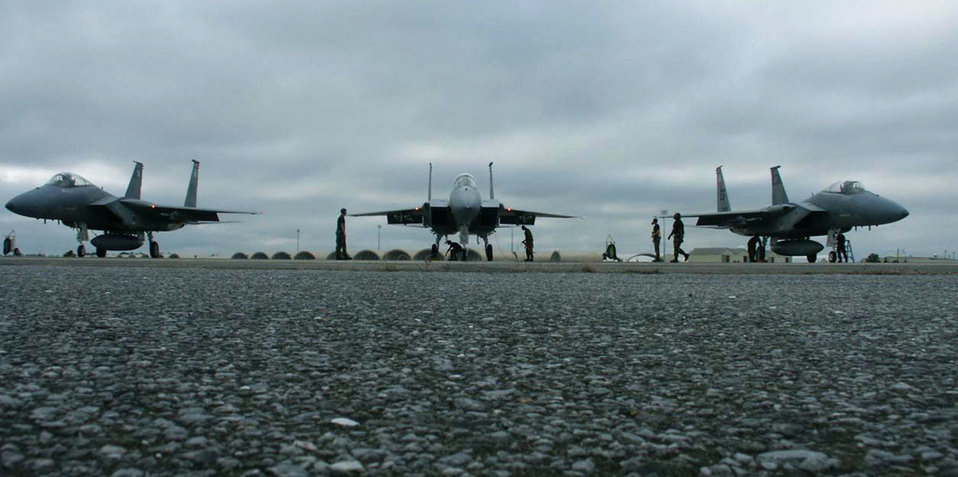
Bases, aircraft prepare for Hurricane Ivan

EGLIN AIR FORCE BASE, Fla. -- Airmen from the 33rd Aircraft Maintenance Squadron here complete final launch preparations at end of the runway early Sept. 14. About 34 F-15 Eagles assigned to the 33rd Fighter Wing are being sent evacuated because of Hurricane Ivan. The aircraft will be temporarily stationed elsewhere until conditions at Eglin AFB are safe.